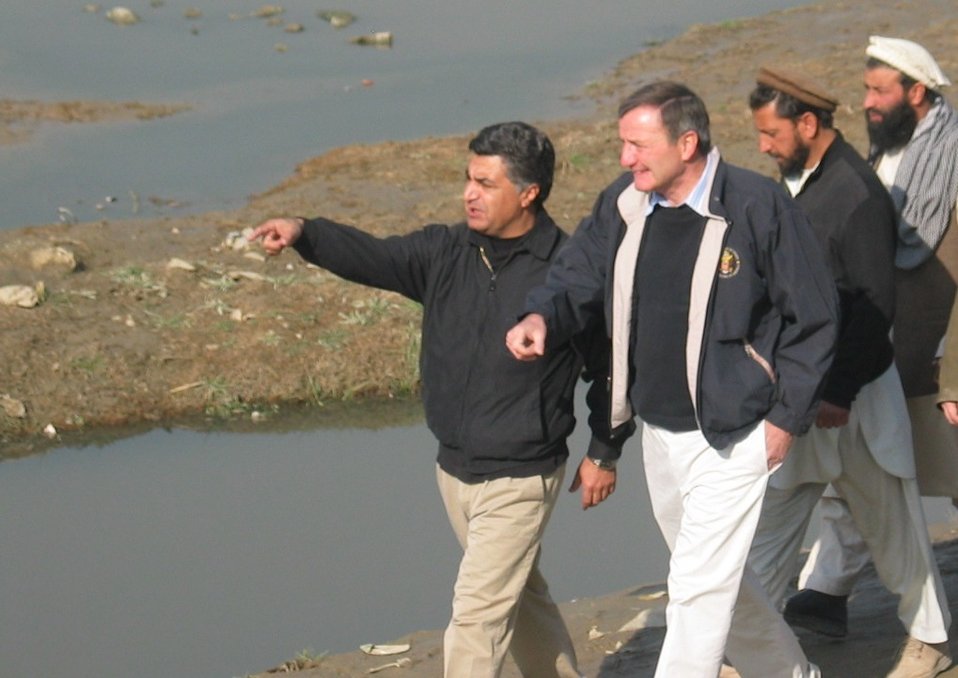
Kabul River Bridge Renovation, December 3, 2010